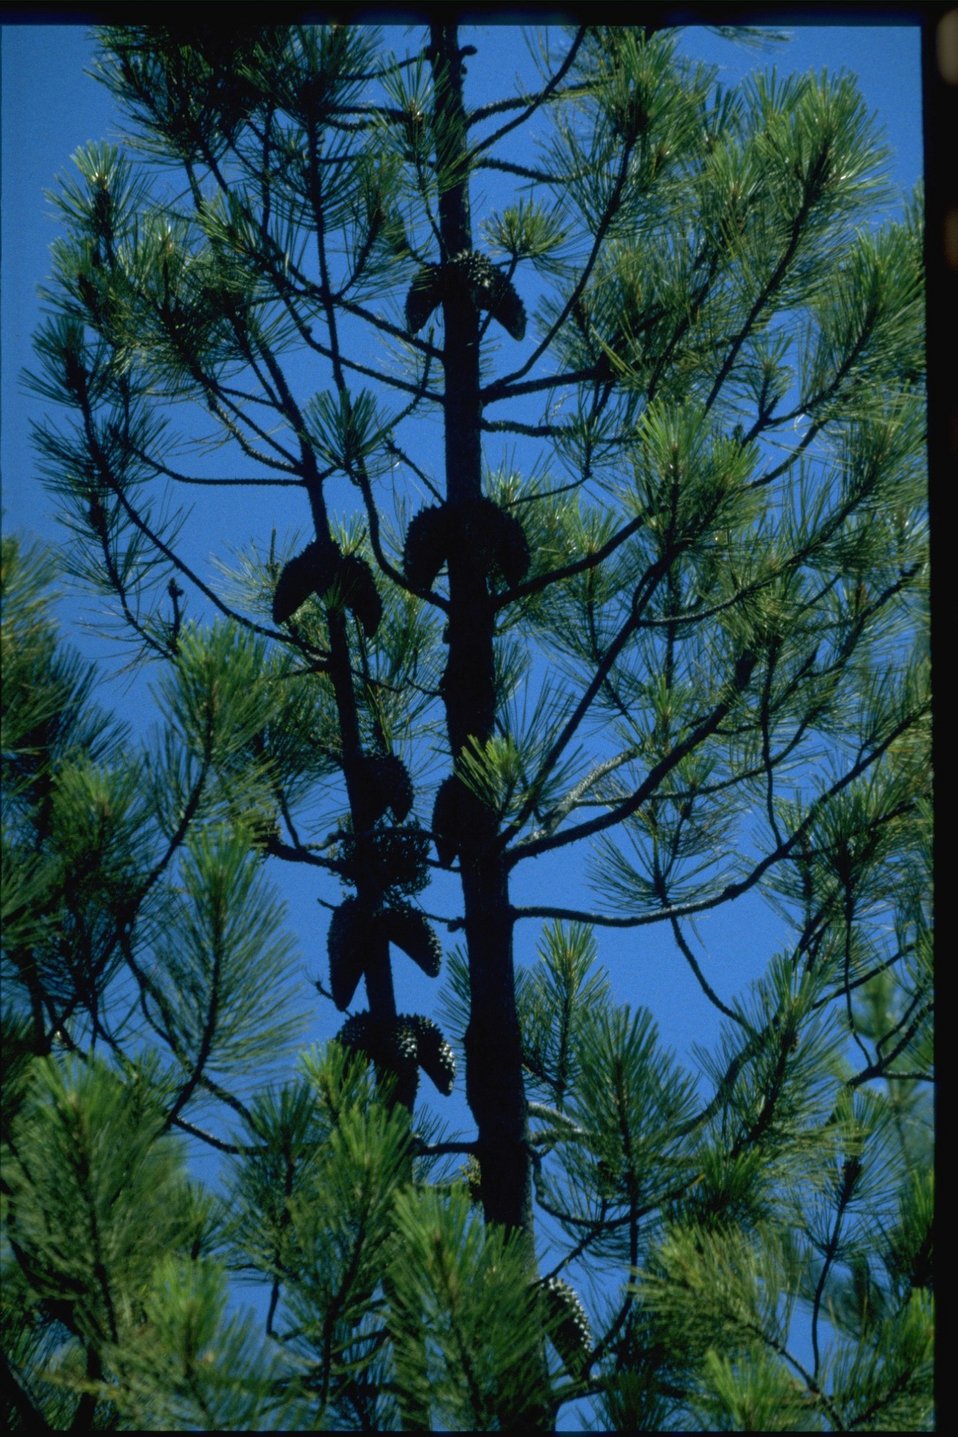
Farshot of Knobcone Pine, Pinus attenuata.